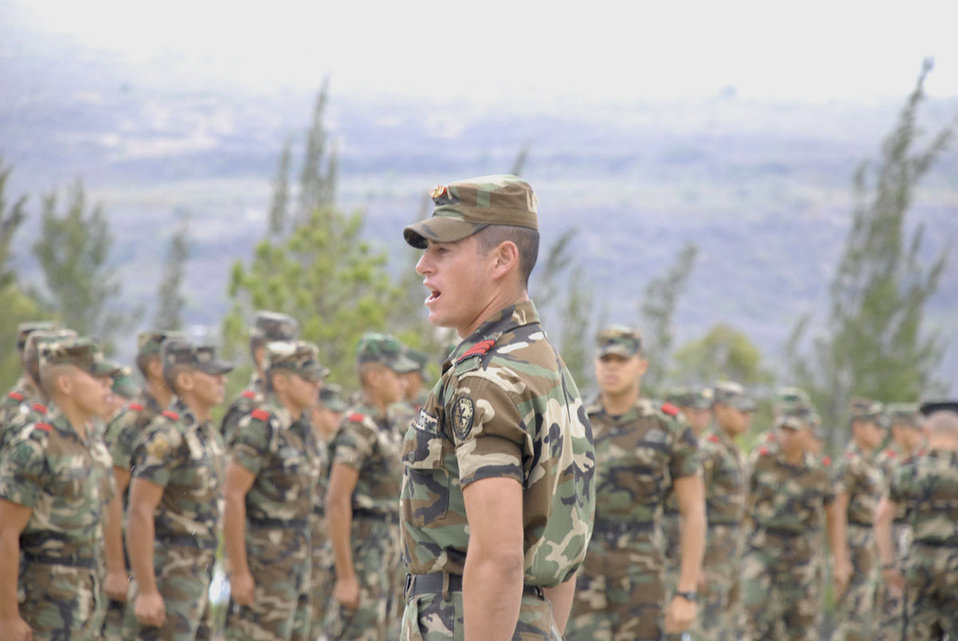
American servicemembers visit Honduran military academy

A Honduran cadet barks orders during a formation April 16 at the Honduran military training academy in Tegucigalpa, Honduras. Joint Task Force-Bravo members from Soto Cano Air Base, Honduras exchanged information with academy officials.